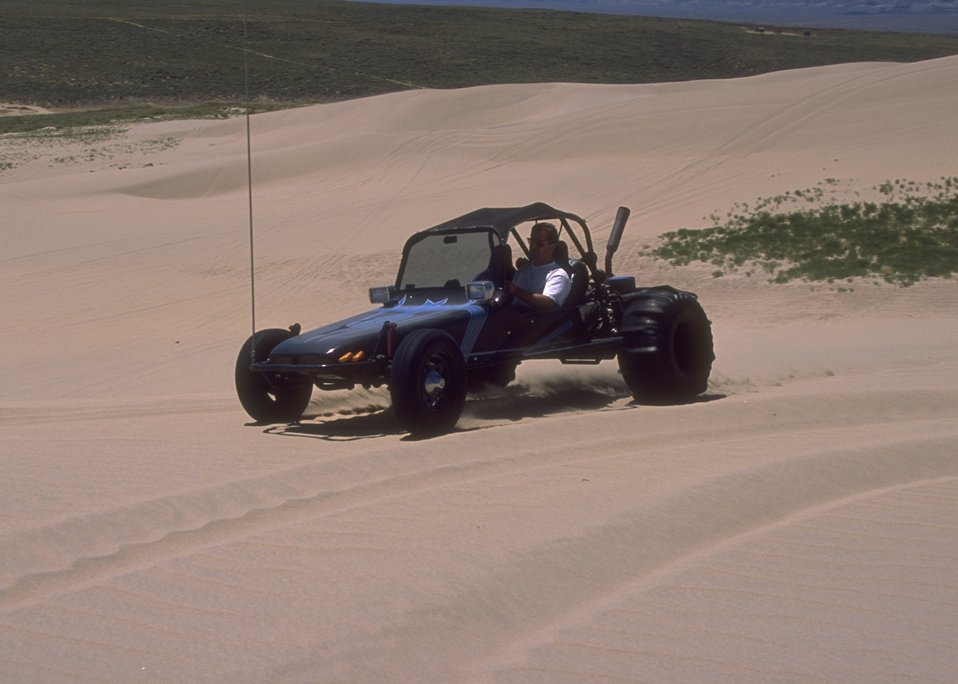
Sand Dunes OHV Area, Rock Springs Field Office.